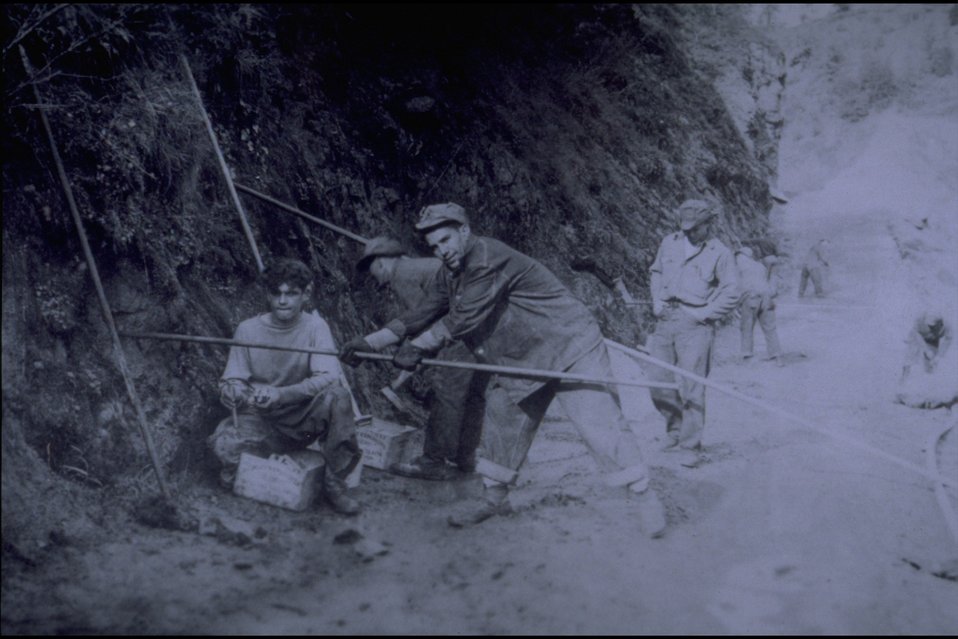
Rogue River - Just below Indian Mary Park. CCC Boys packing powder.